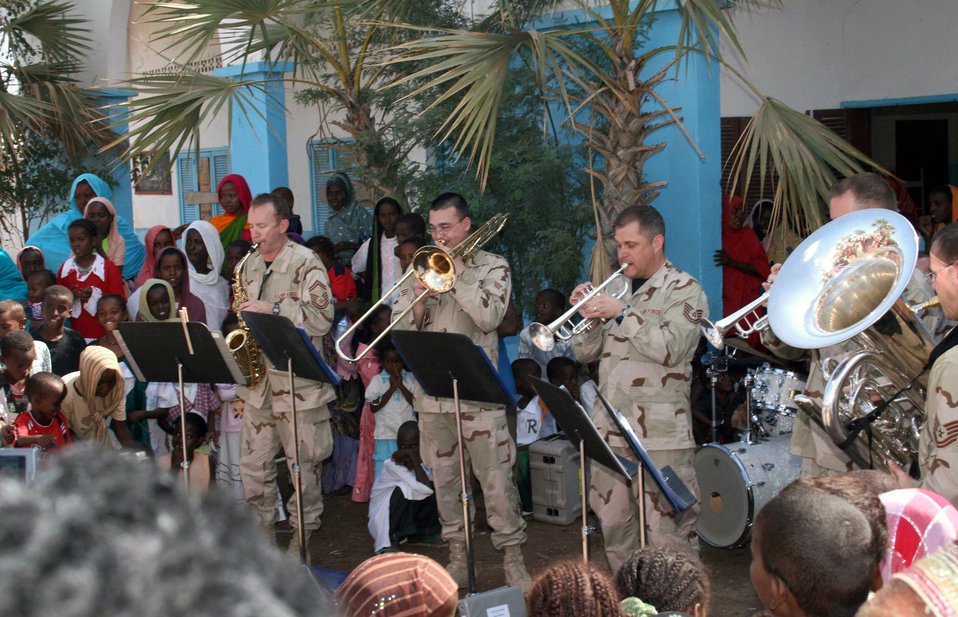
Djiboutians delight in the sounds of

United States Central Command Air Forces Expeditionary Band